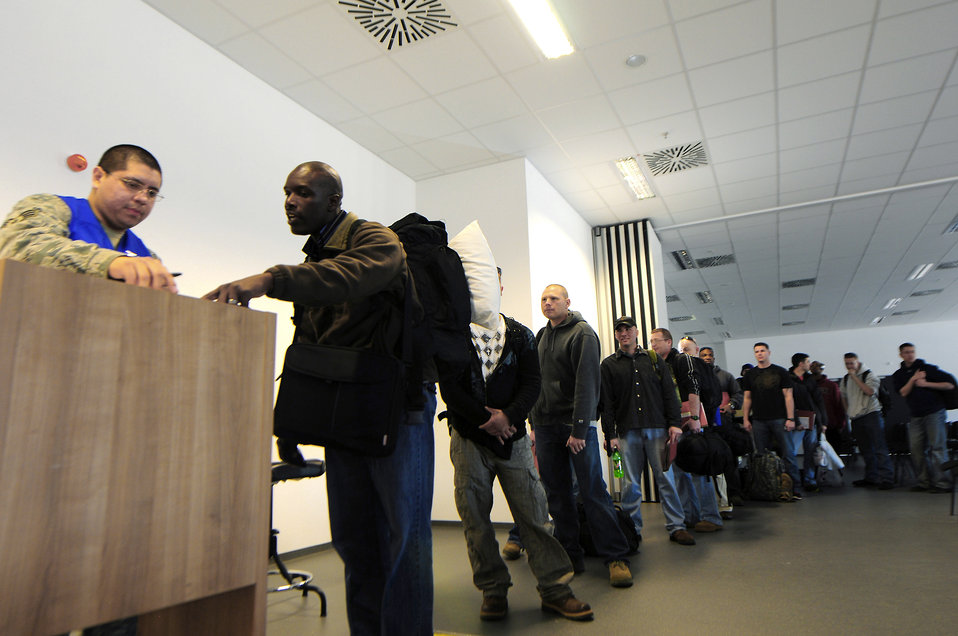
Airmen Support Joint Task Force Odyssey Dawn

U.S. Air Force Airmen from the 86th Civil Engineer Squadron prepare to deploy in support of Joint Task Force Odyssey Dawn, Ramstein Air Base, Germany, March 21, 2011. The U.S. Africa Command task force was established to provide operational and tactical command and control of U.S. military forces supporting the international response to the unrest in Libya and enforcement of United Nations Security council Resolution 1973. UNSCR 1873 authorizes all necessary measures to protect civilians in Libya under threat of attack by Qadhafi regime forces. JTF Odyssey Dawn is commanded by U.S. Navy Admiral Samuel J. Locklear, III.